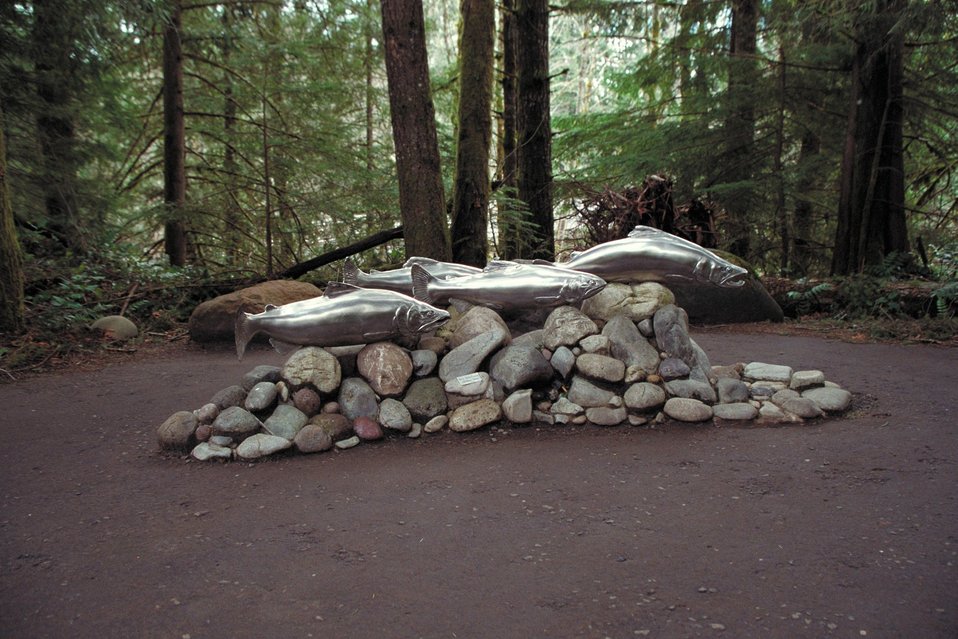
Cascade Stream Watch is an environmental education program conducted at BLM's Wildwood Recreation site.